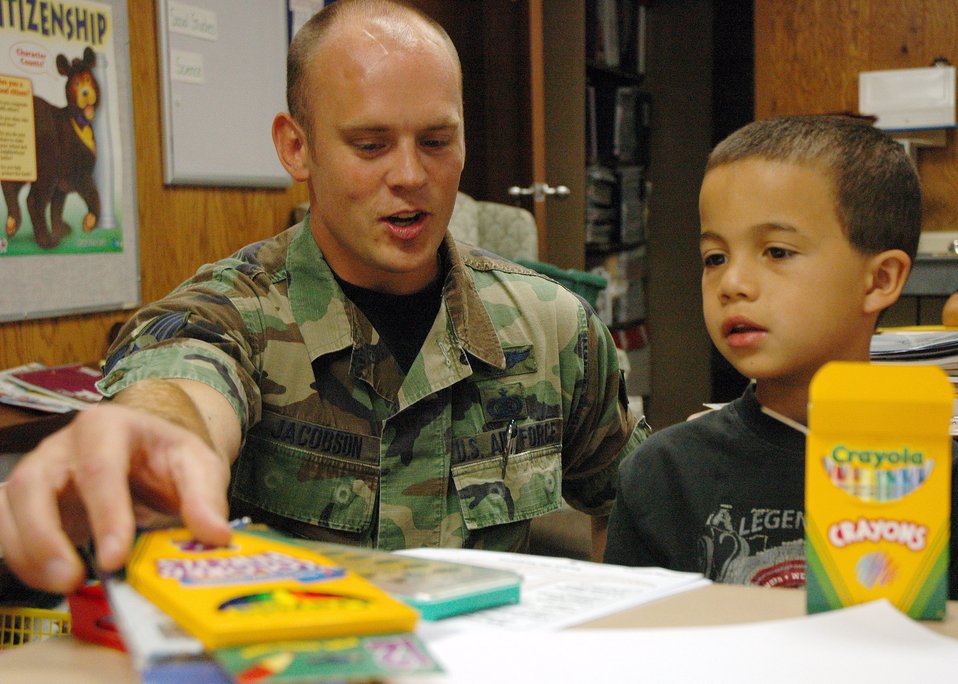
Offutt agency provides supplies to school

Staff Sgt. Brandon Jacobson presents new school supplies to 8-year-old Lorenso Carey Aug. 23 at Indian Hill Elementary School in Omaha, Neb. An Air Force Weather Agency team collected 200 pounds of assorted school supplies and delivered them to the school's children. Sergeant Jacobson is the NCO in charge of network infrastructure for AFWA's 2nd Systems Operations Squadron.